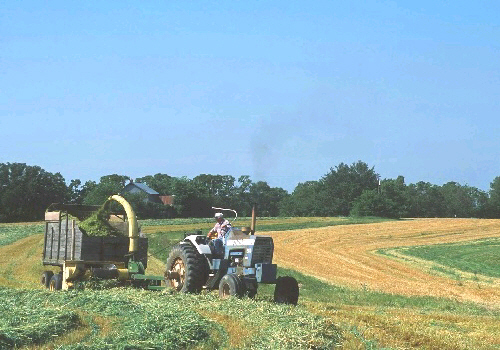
pc330 4 lg nk

Harvesting hay from a field that is being farmed along the contour of the land. FSA loan programs provide America's farm families with the support they need to feed America and the world. This is a USDA photo from NRCS.